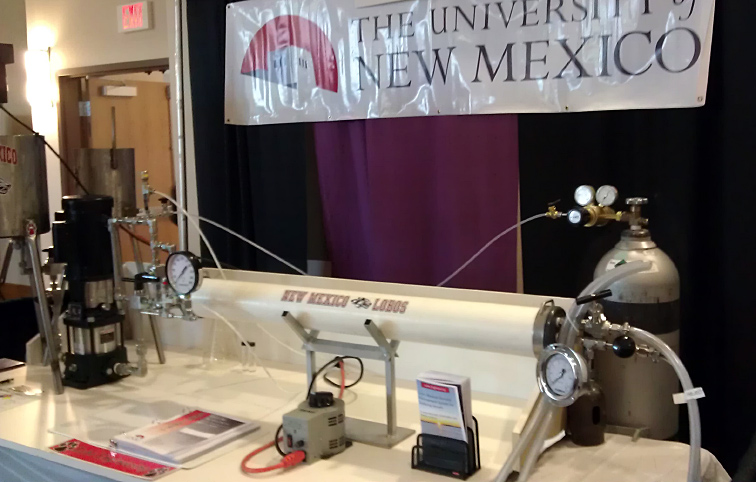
CBFO Members Are DOE Judges at International Environmental Design Contest

University of New Mexico bench design for saltwater treatment was one of projects in the 2012 WERC IEDC.

***

Carlsbad Field Office (CBFO) members Dr. Josef Sobieraj of Environmental Safety and Health and Steve Casey of the National TRU Program served as judges for the recent 2012 Waste-management Education and Research Consortium (WERC) International Environmental Design Contest (IEDC).

“This annual event brings together industry, government and academia in search of environmental solutions,” said Casey.